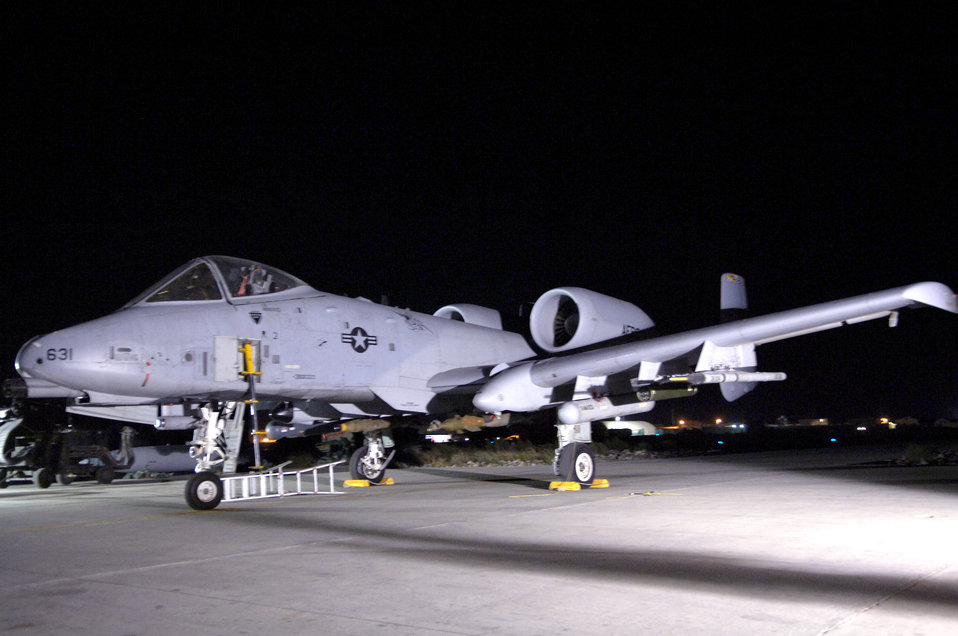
A-10, ready for action

An A-10 Thunderbolt II sits on a ramp waiting for its next mission at Bagram Air Base, Afghanistan, on July 6. The A-10 is used for close-air support.